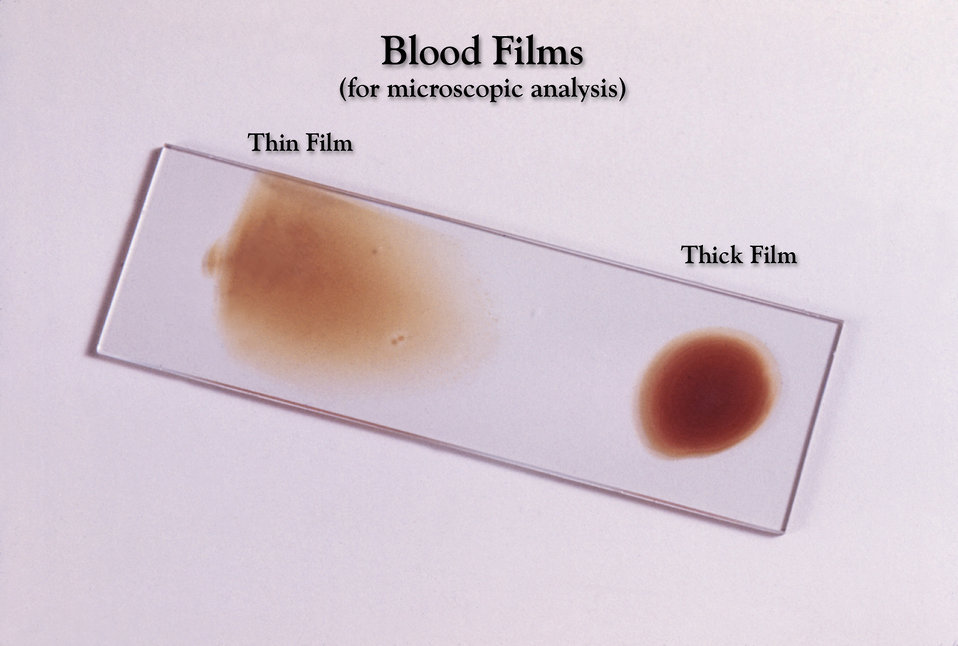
This prepared slide offers an example of the appearance of thick and thin blood smears to be examined under the microscope.